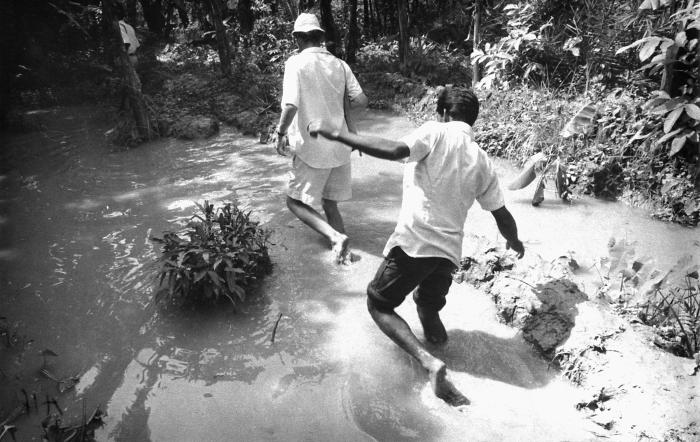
The battle for smallpox was fought and won in the field, as demonstrated by these two smallpox field workers as they walked through water and mud. The worker wearing a white hat, is carrying the 'Smallpox Zero Bag', made out of jute, a plant fiber from the East Indian plant Corchorus olitorius, which carried the example pictures of smallpox cases, the bifurcated needles, and the smallpox vaccine.This image was part of a series provided by Dr. Stan Foster, and captured by Pierre Claquin, M.D., B.A.C., who at the time was a member of the World Health Organization's Smallpox Eradication Program. It was one of a series entitled 'The Story of One Smallpox Jeep', which depicted the travails faced by the jeep, and its occupants of public health practitioners, as they road through the Bangladesh countryside in an attempt to eradicate smallpox from the country.